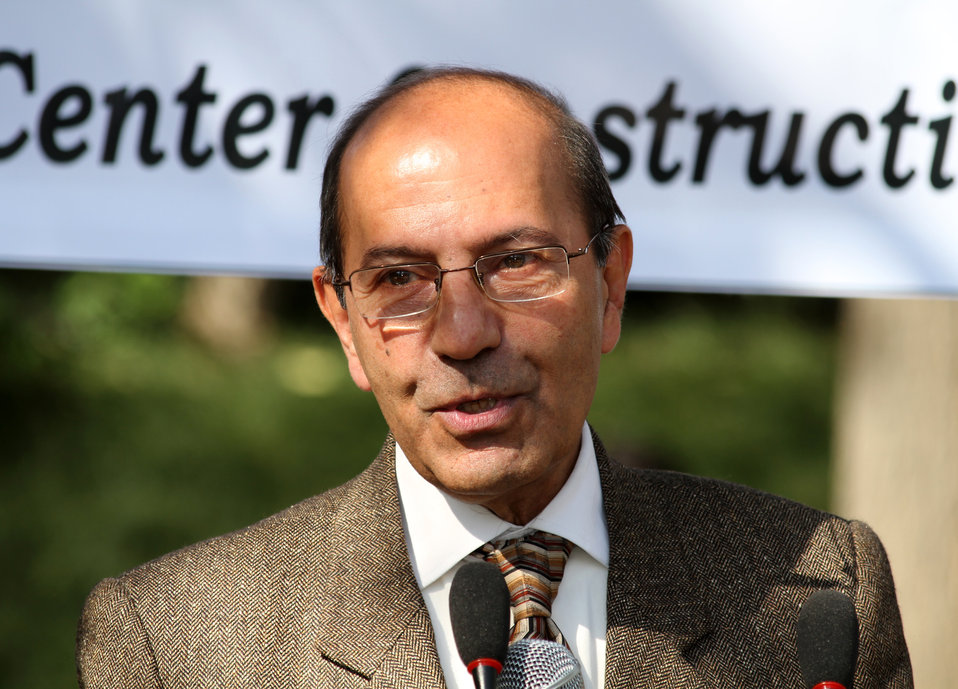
Minister of Information and Culture